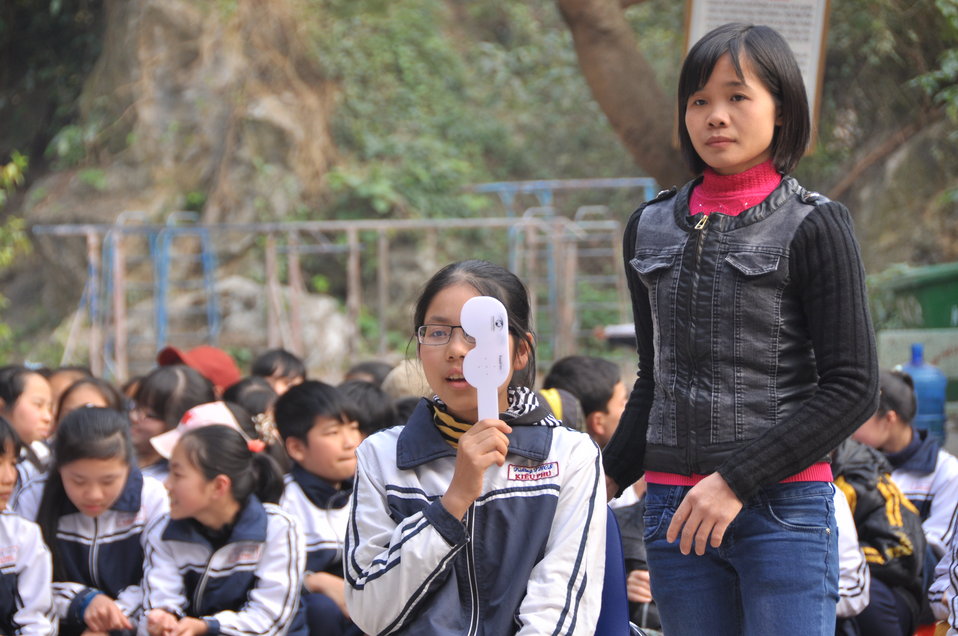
USAID supports distribution of eyeglasses to pupils and teachers in Quoc Oai, Hanoi.

Kieu Phu Junior Secondary School, Quoc Hoai, Hanoi, December 23, 2013.